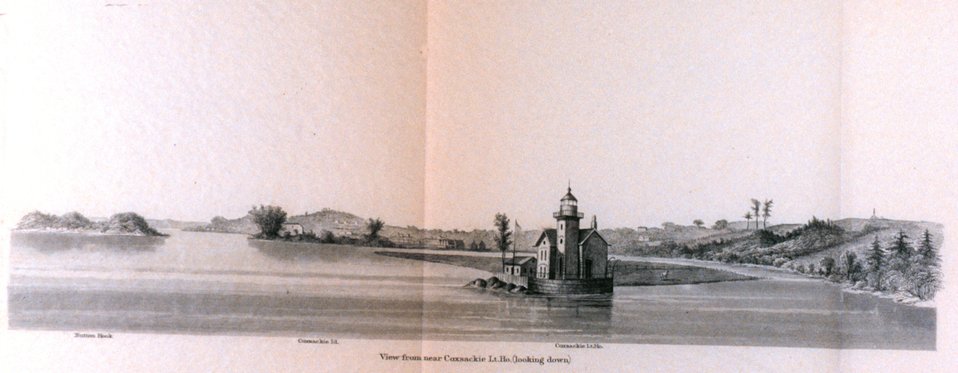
View from near Coxsackie Lighthouse. (Looking down.) On the Hudson River. In: Atlantic Local Coast Pilot Sub-Division 13 South Coast of Long Island New York Bay and Hudson River 1880. P. 620. Library Call Number VK981.A3 1879 Sub-13 2nd ed. 1880.